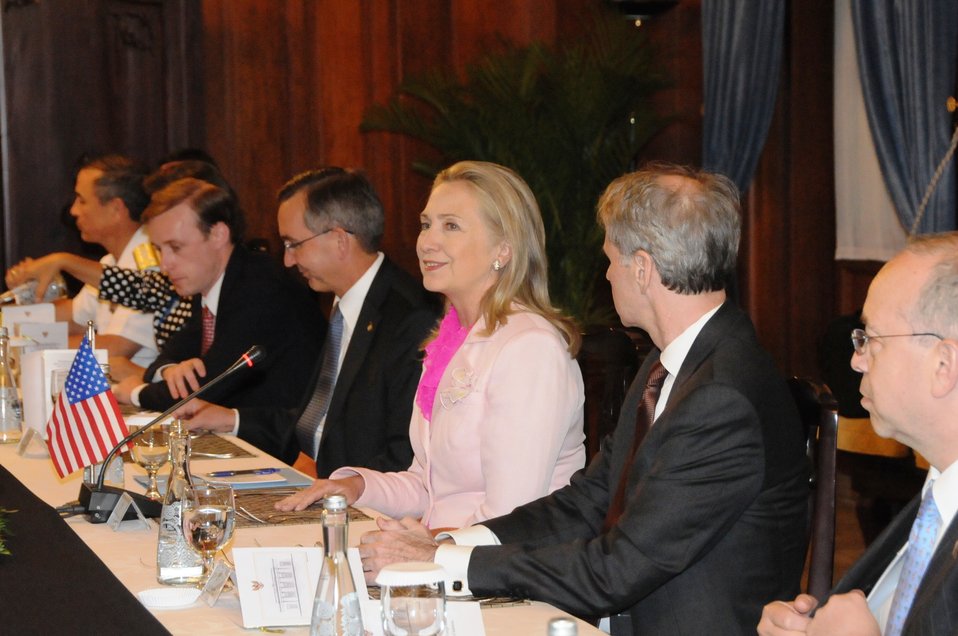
Secretary Clinton Meets With Senior Officials in Indonesia

U.S. Secretary of State Hillary Rodham Clinton meets with senior officials in Jakarta, Indonesia, September 3, 2012.